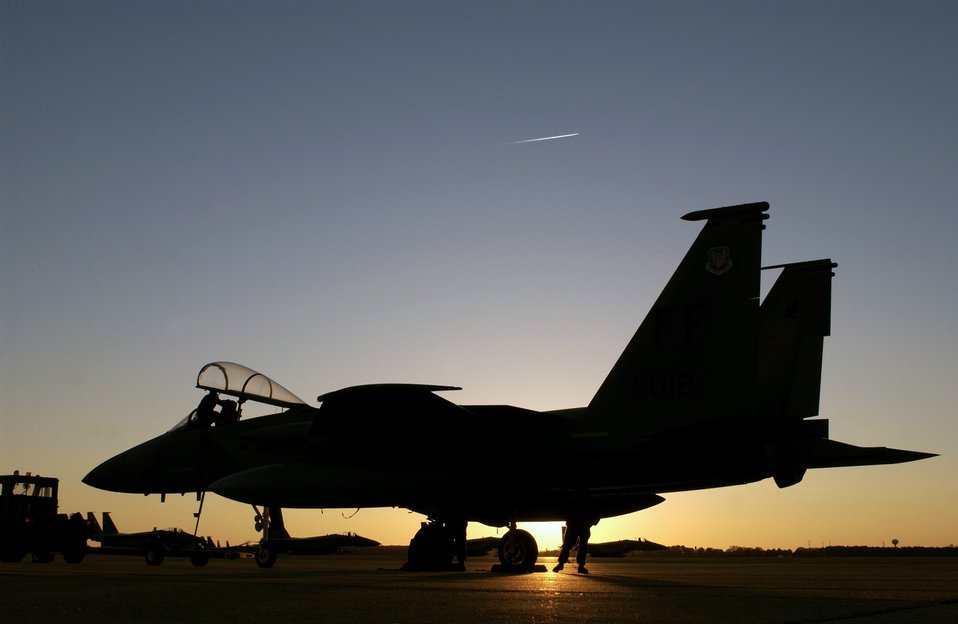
Sun sets on flying mission

LANGLEY AIR FORCE BASE, Va. -- Crew chiefs with the 1st Aircraft Maintenance Squadron here tow an F-15 Eagle at the end of the day.